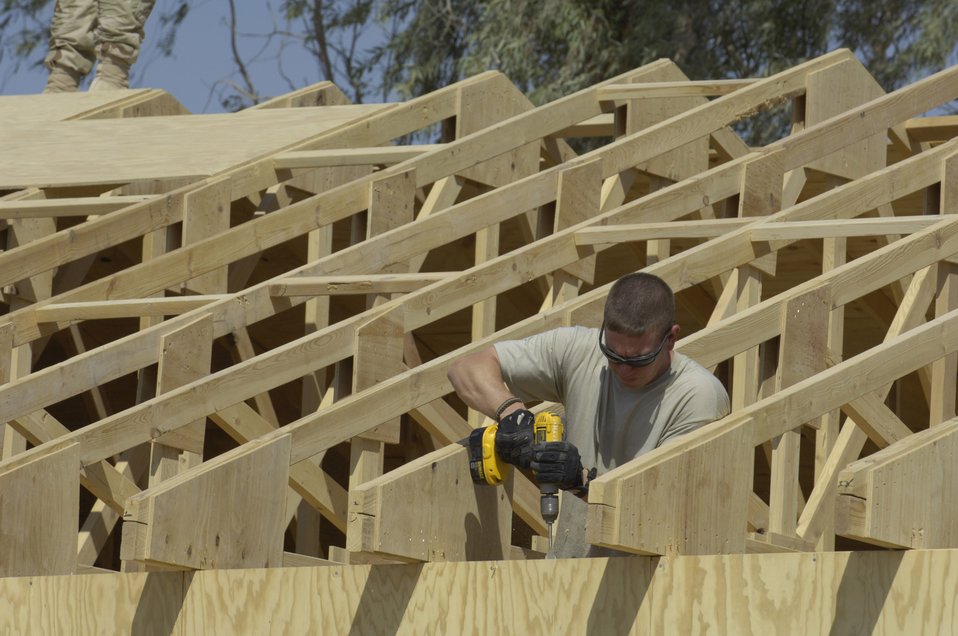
RED HORSE Airmen support Army in southern Baghdad

Tech. Sgt. Rain Albertson drills holes in the framework of the first of four tactical operations centers in order to run wires which will provide electrical service in the building June 22 at Forward Operating Base Kalsu, Iraq. Sergeant Albertson is an electrician with the 557th Expeditionary RED HORSE Squadron deployed from Pope Air Force Base, N.C., and is originally from Hampton, Va. He and his fellow Rapid Engineer Deployable Heavy Operational Repair Squadron Engineers , or RED HORSE, Airmen are forward deployed from Balad Air Base, Iraq, to build four tactical operations centers for the Army's 2nd Brigade combat team, 3rd Infantry Division headquartered here. The 2/3 ID are currently running their operations out of tents. The RED HORSE unit was requested by the Army to come into this